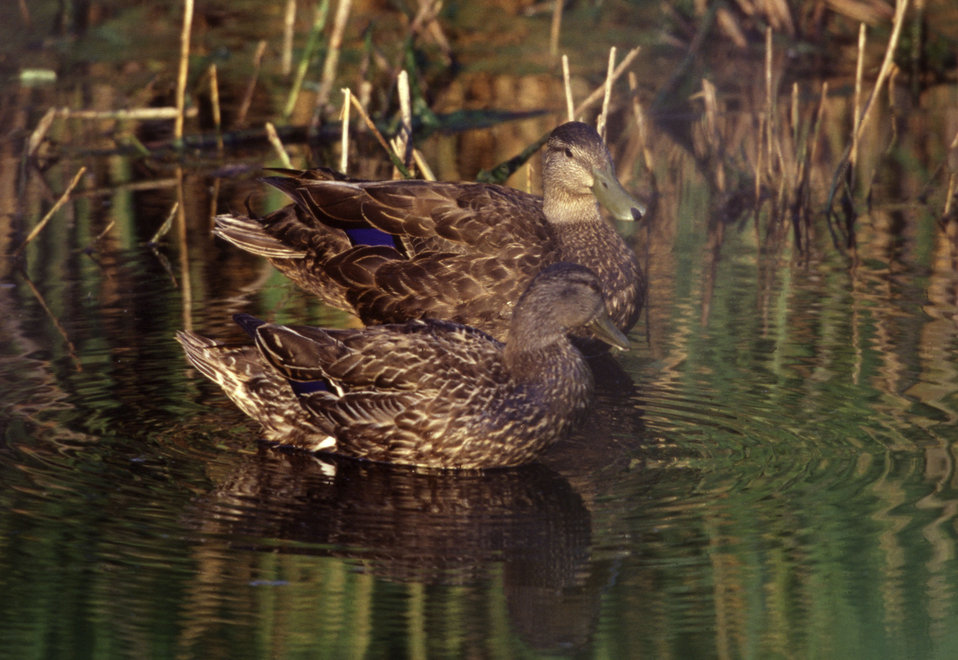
Black Ducks